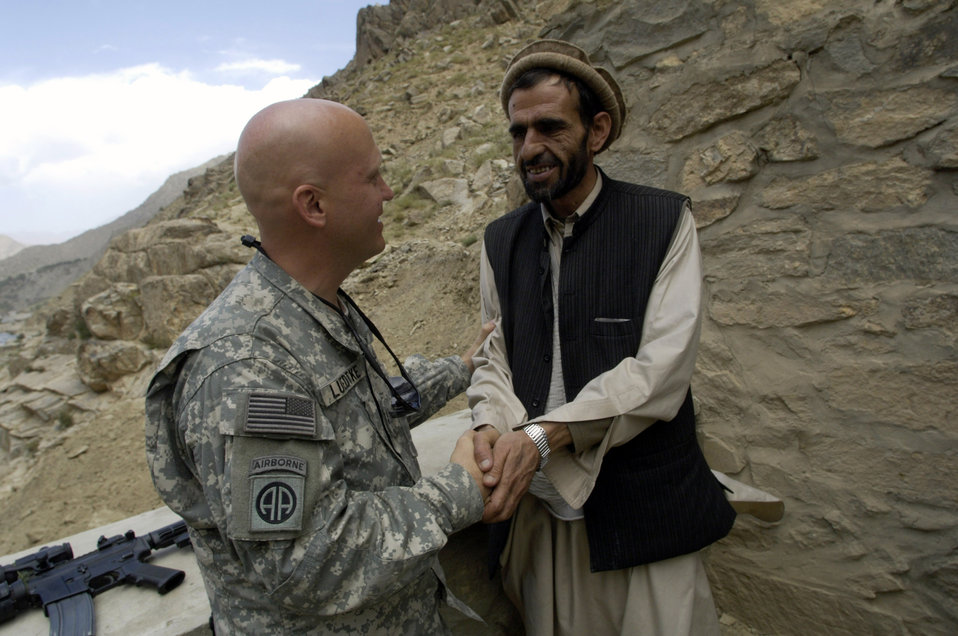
Panjshir PRT

Panjshir Provincial Reconstruction Team commander Lt. Col. Christopher Luedtke meets with Dara district public health minister Dr. Dad Aug. 5 to discuss the progress of the district's medical center expansion project. Colonel Luedtke brought members of his PRT into the Dara district of Panjshir province, Afghanistan, to meet with district officials. Colonel Luedtke is deployed from Hill Air Force Base, Utah. The Panjshir PRT stood up in 2005 and is directed by Ben Lowenthal from the U.S. State Department. Housed at Forward Operating Base Lion in the Hindu Kush mountains, the 40-member team interfaces with a population of approximately 300,000 Afghans spread across 1,393 square miles in six districts.